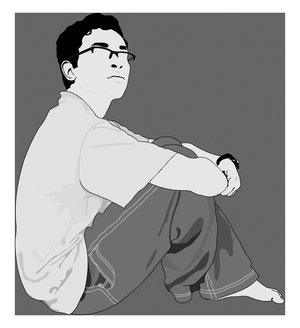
This is a selfportrait (Zaki,http://tn3-1.deviantart.com/fs4/300W/i/2004/248/2/f/a colorblind boy by a colorblind boy.jpg,etc.)